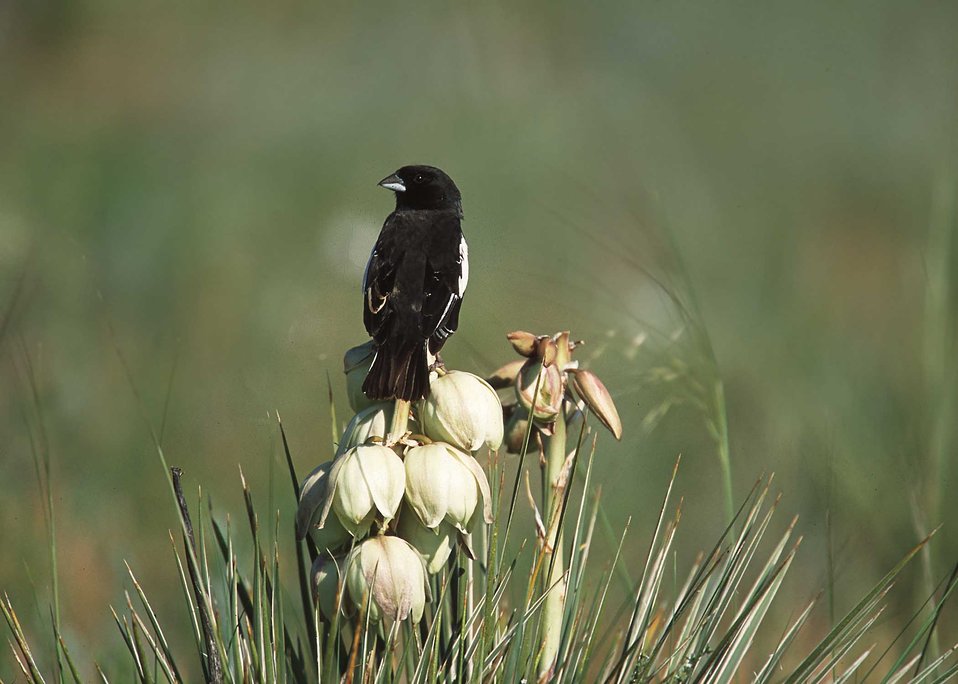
Male Lark Bunting